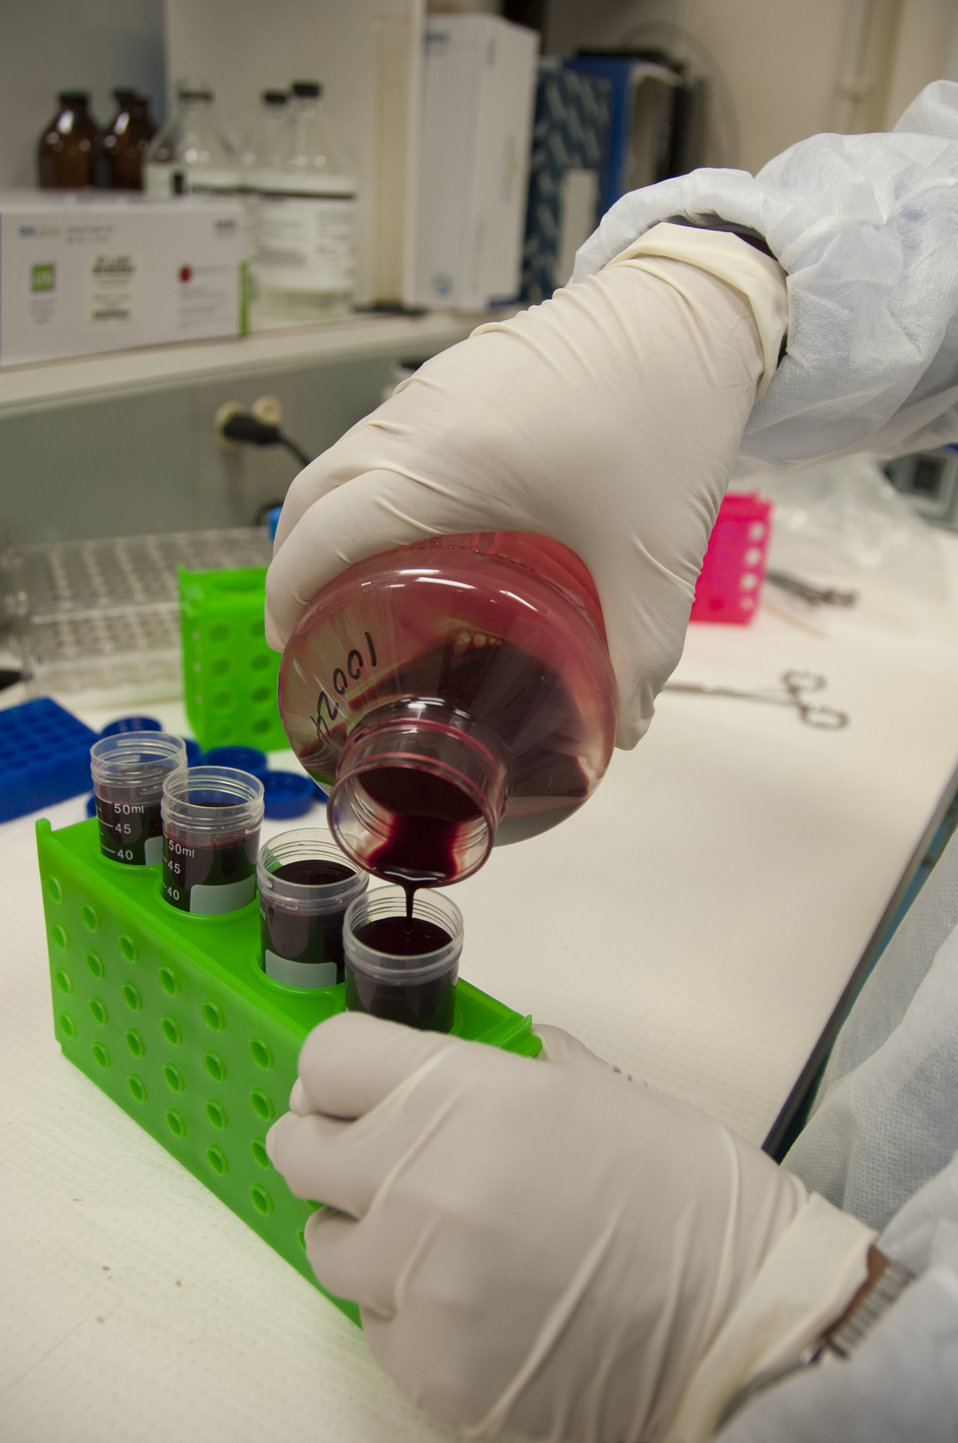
Blood Research: Saving Lives (8405)

Jason Liu, Ph.D., a laboratory chief at FDA’s Office of Blood Research and Review, transfers blood to a 50 ml tube for further processing. FDA is responsible for the safety of our nation’s blood supply and is at the forefront of evaluating and encouraging innovative technologies for protecting it.

Read this Consumer Update to learn more: Advances in Saving Lives with Blood